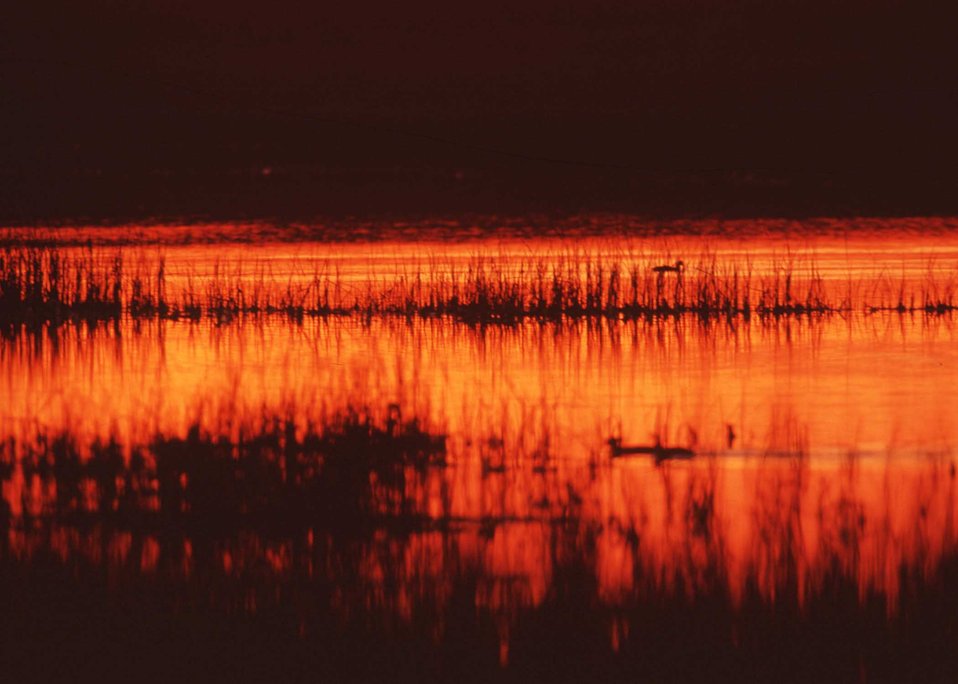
Sunset in South Dakota

Sunset in the prairie pothole region of South Dakota.